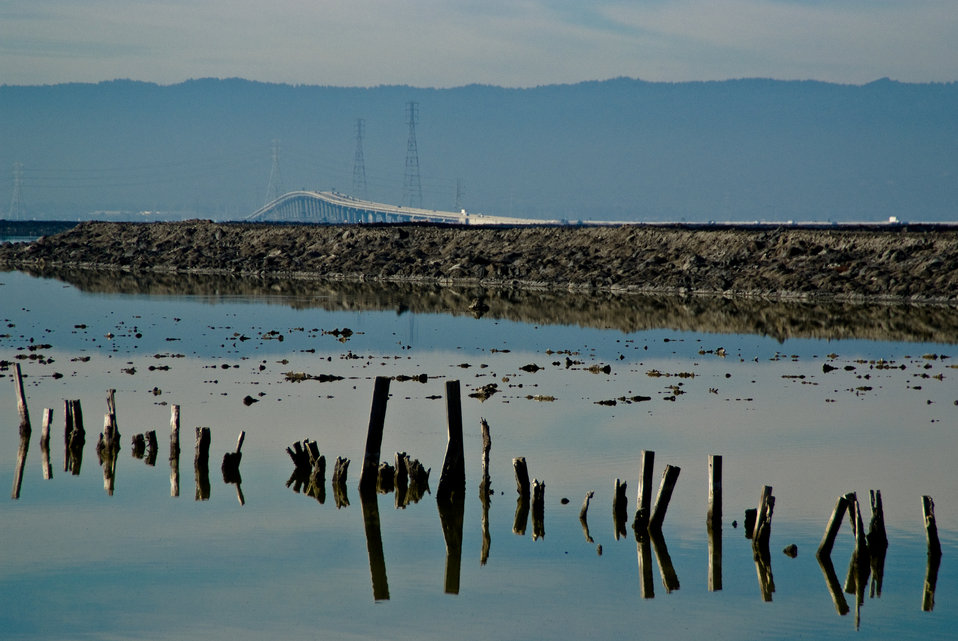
Water view at Don Edwards San Francisco Bay National Wildlife Refuge

Don Edwards San Francisco Bay National Wildlife Refuge